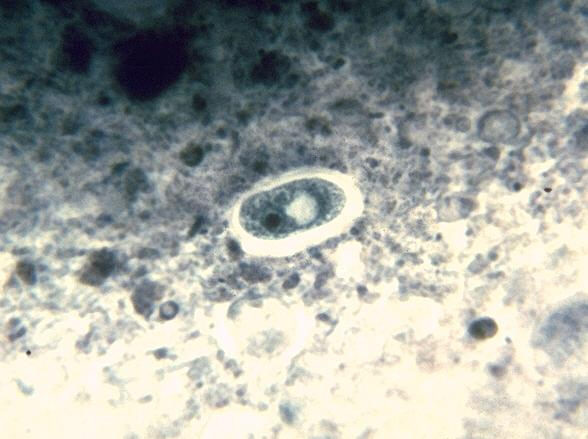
Iodamoeba bütschlii cyst. Chlorazol black stain.